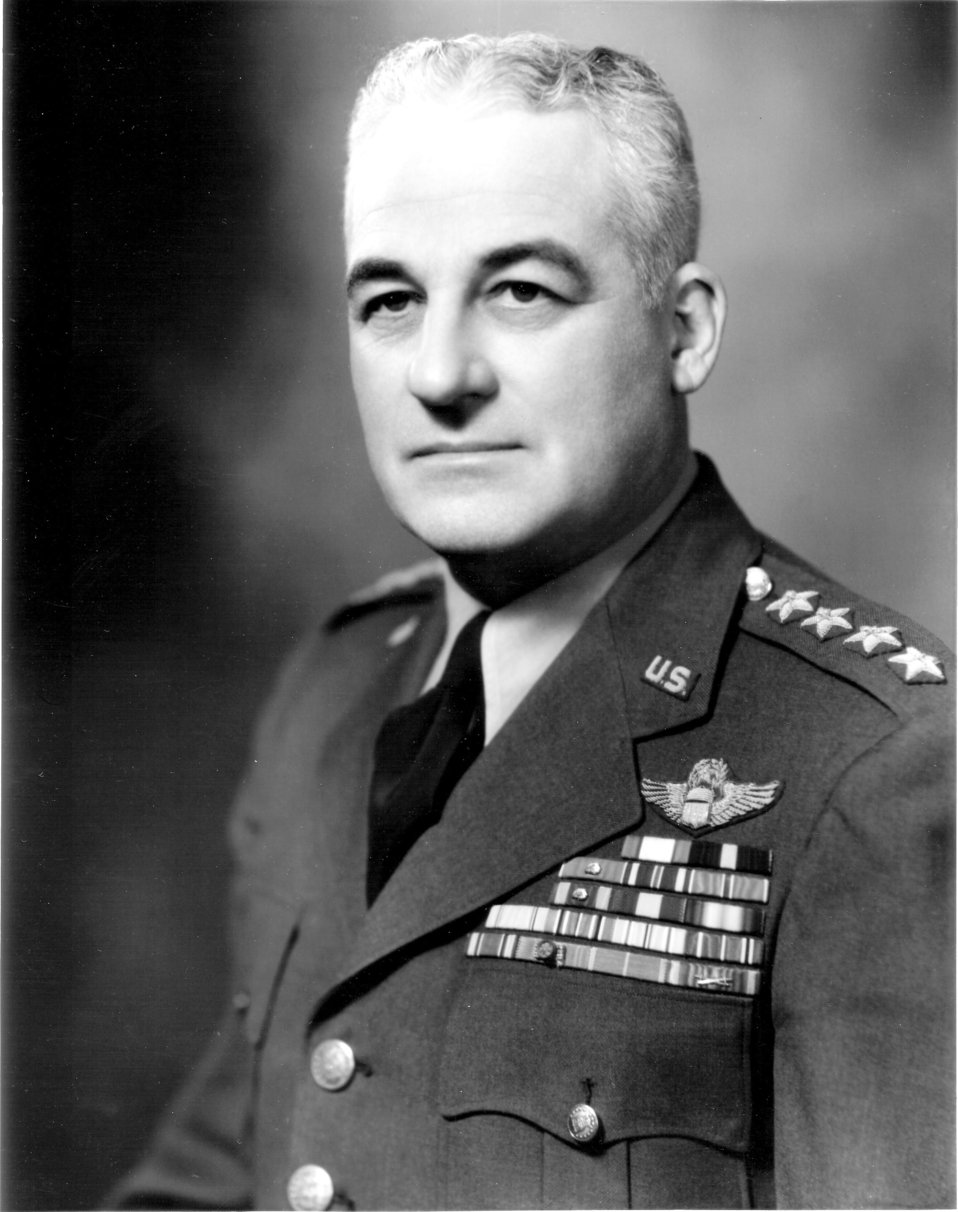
General Nathan F. Twining

1950's -- General Nathan F. Twining was Air Force chief of staff from 1953 - 1957. He also served as chairman of the Joint Chiefs of Staff from 1957 - 1960.